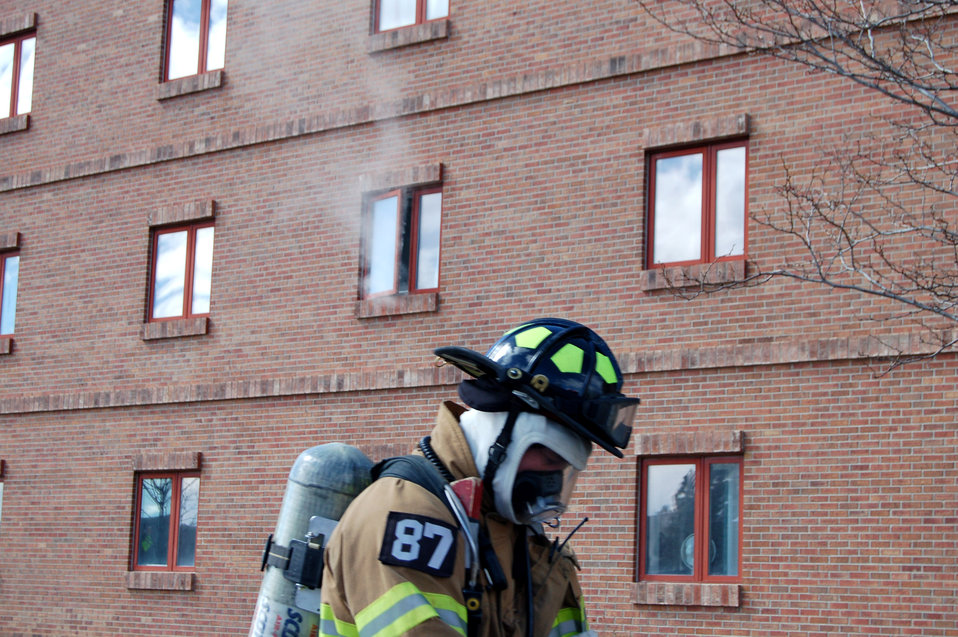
Firefighter lives his childhood dream

Cary Ulman prepares to enter a dormitory during a firefighting exercise April 10 at Peterson Air Force Base, Colo. The training is essential to keeping the firefighters sharp and ready to perform their duties in a moment's notice.